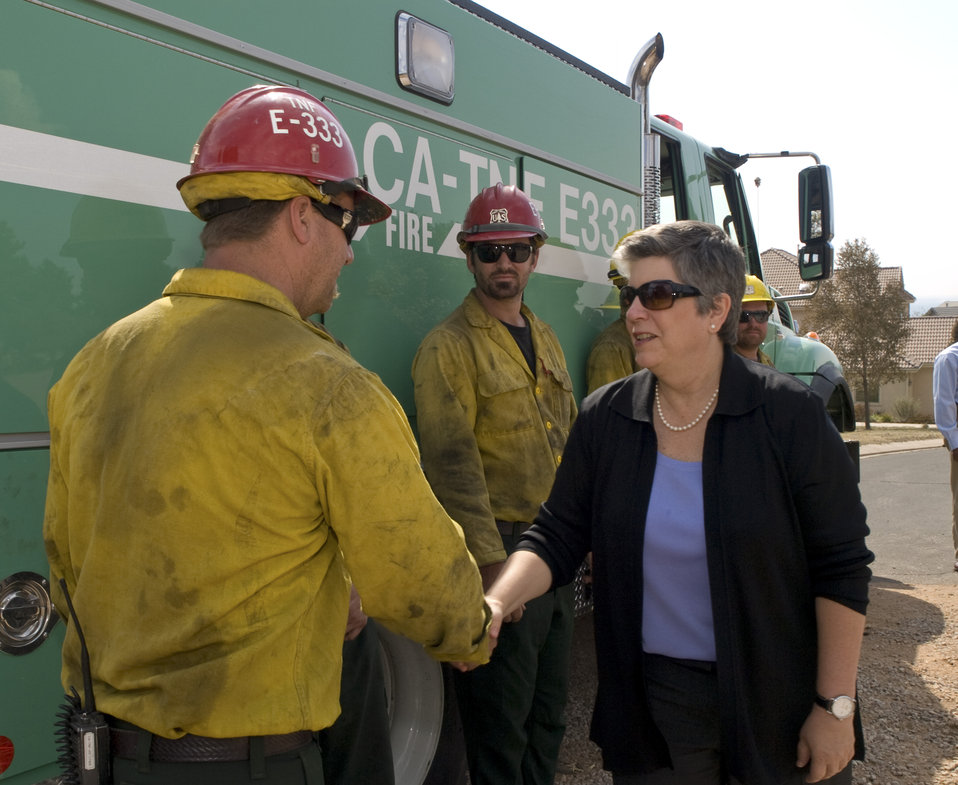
Homeland Security Secretary Janet Napolitano talks with firefighters at the Waldo Canyon near Colorado Springs, CO on Tuesday, July 3, 2012.